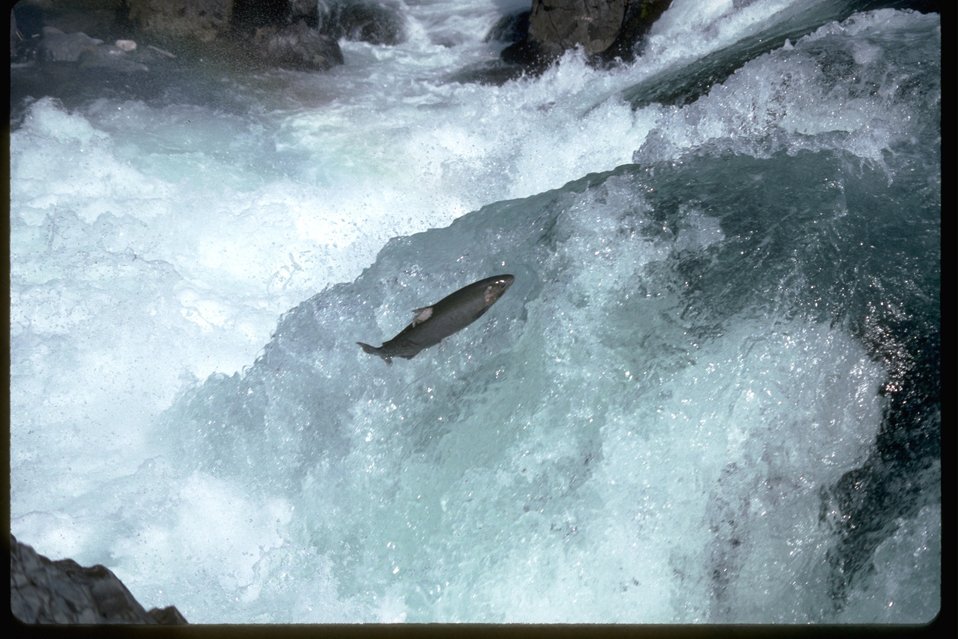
Salmon or Steelhead jumping up falls.